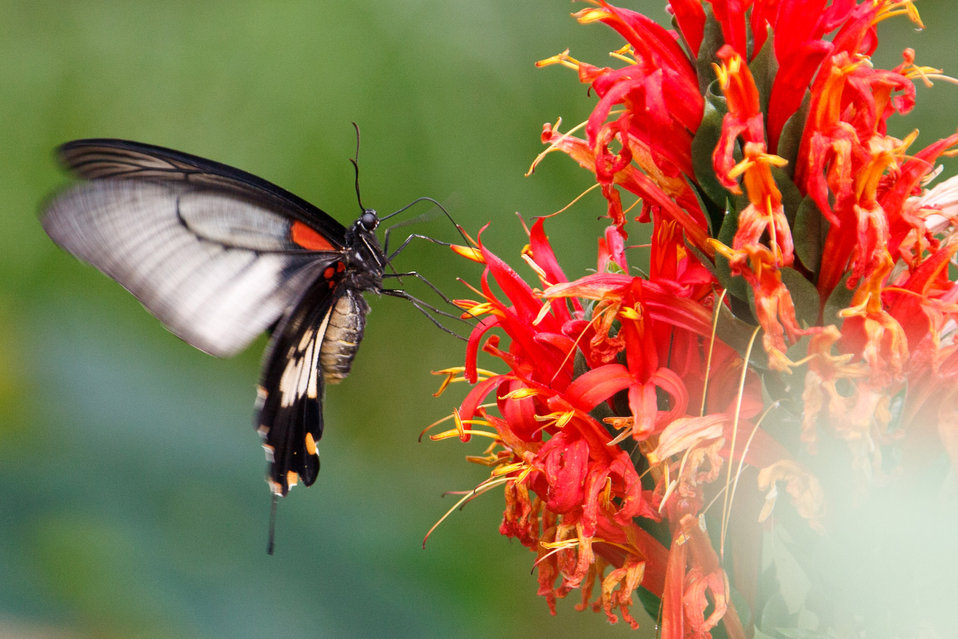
Butterfly on a flower

Tropical butterfly on a flower.